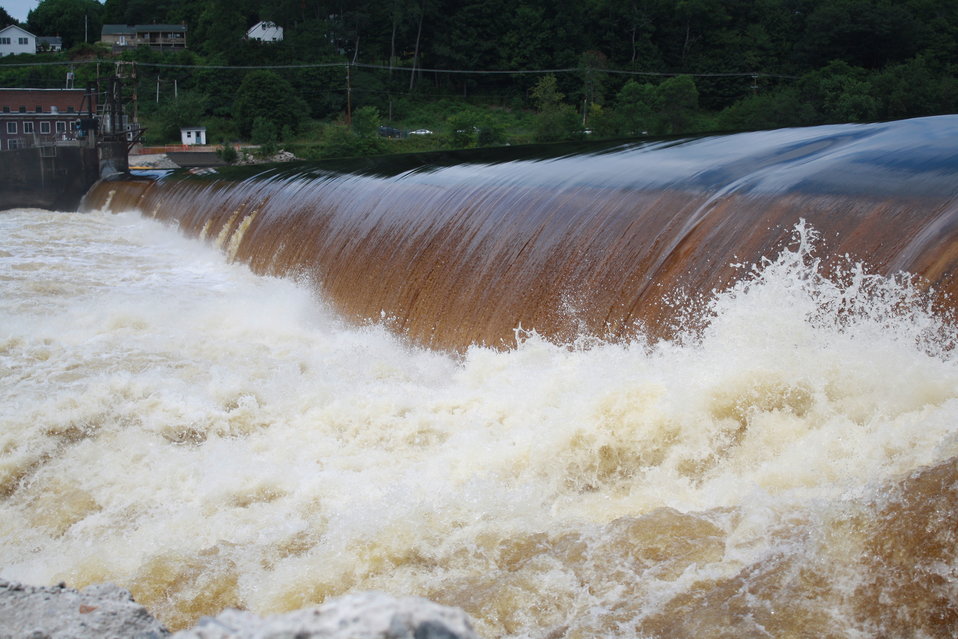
Veazie Dam Removal

A shot of water pouring over the Veazie Dam, where it will soon flow freely to the sea.